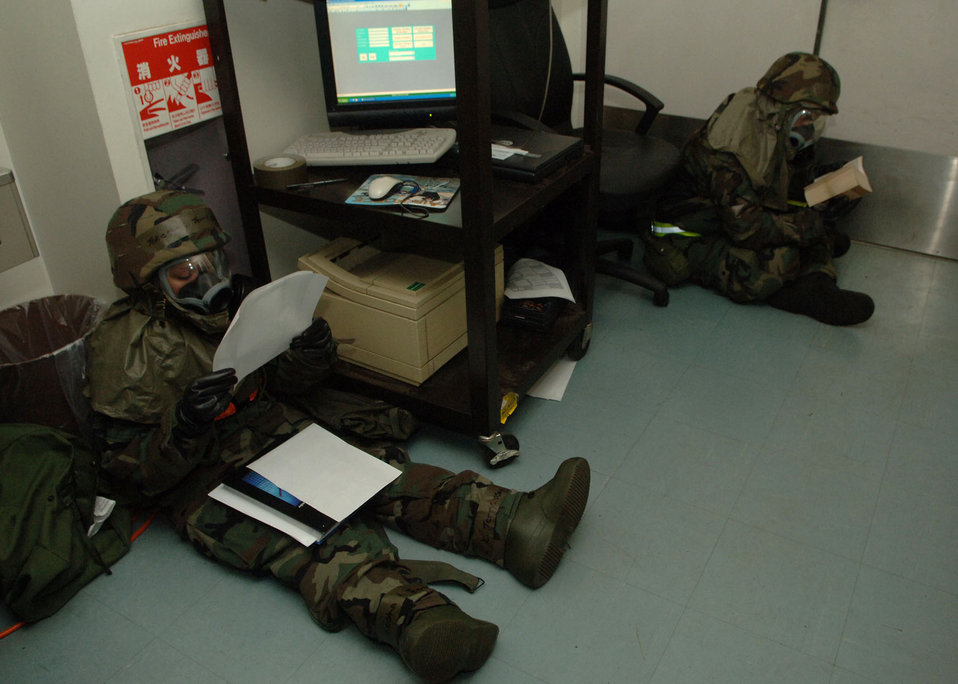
Practicing to stay safe

Staff Sergeant Tekesha Terry and Airman 1st Class Thomas Underwood read while in mission-oriented protective posture 4 at Yokota Air Base, Japan, during a simulated attack that was part of a 374th Air Wing exercise. MOPP levels relate to chemical or biological hazards. Both Airmen are with the 36th Airlift Squadron.